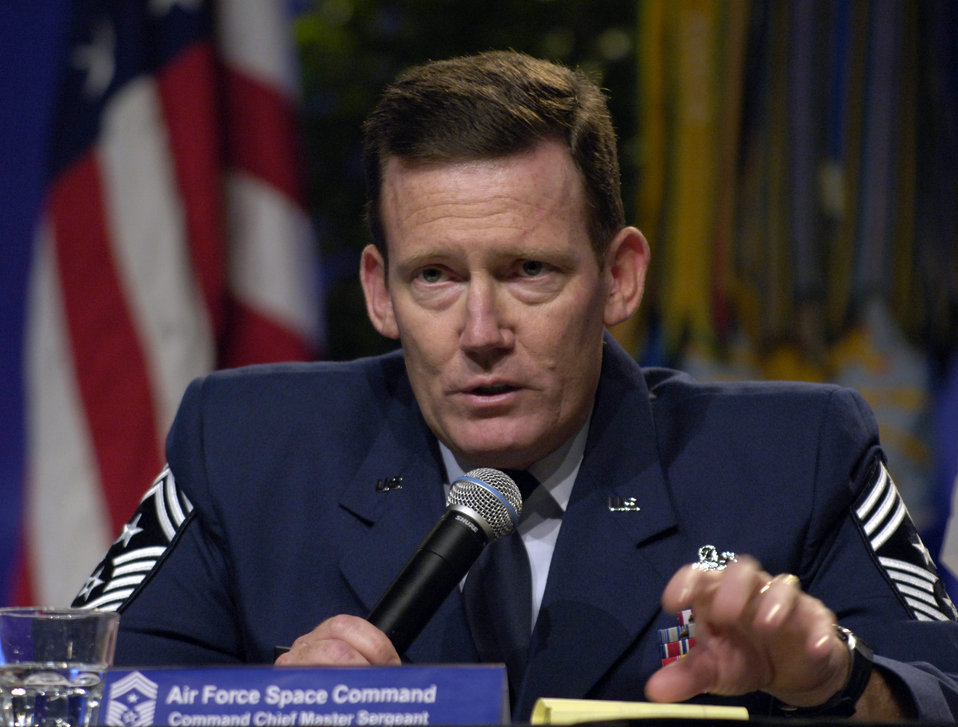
Command chiefs address Airmen's concerns

WASHINGTON -- Command Chief Master Sgt. Ron Kriete, of Air Force Space Command, answers a question during a command chiefs' forum during the Air Force Association's 2005 Air and Space Conference and Technology Exposition here Sept. 12. The panel consisted of command chiefs from across Air Force major commands.